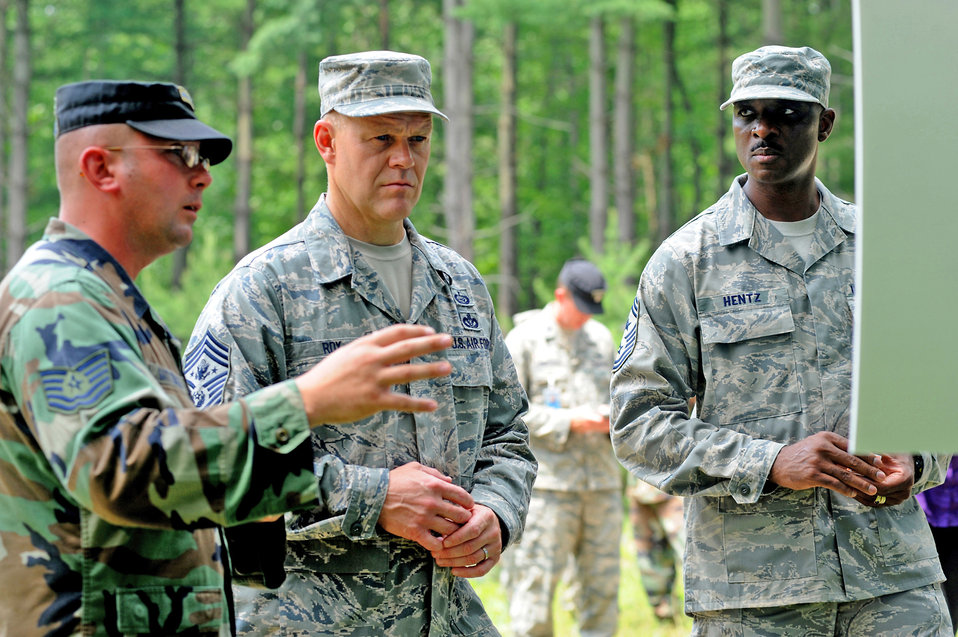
CMSAF visits expeditionary center

Tech. Sgt. Donald Satterlee briefs Chief Master Sgt. of the Air Force James Roy about advanced contingency skills training for Airmen while Chief Master Sgt. Fitzgerald Hentz listens. Part of the July 29 tour took place on a Fort Dix range on Joint Base McGuire-Dix-Lakehurst, N.J. Chief Roy visited the U.S. Air Force Expeditionary Center on Fort Dix and McGuire Air Force Base to learn more about expeditionary training and operations in both areas. Sergeant Satterlee is assigned to the U.S. Air Force Expeditionary Center's 421st Combat Training Squadron. Chief Hentz is the U.S. Air Force Expeditionary Center command chief.